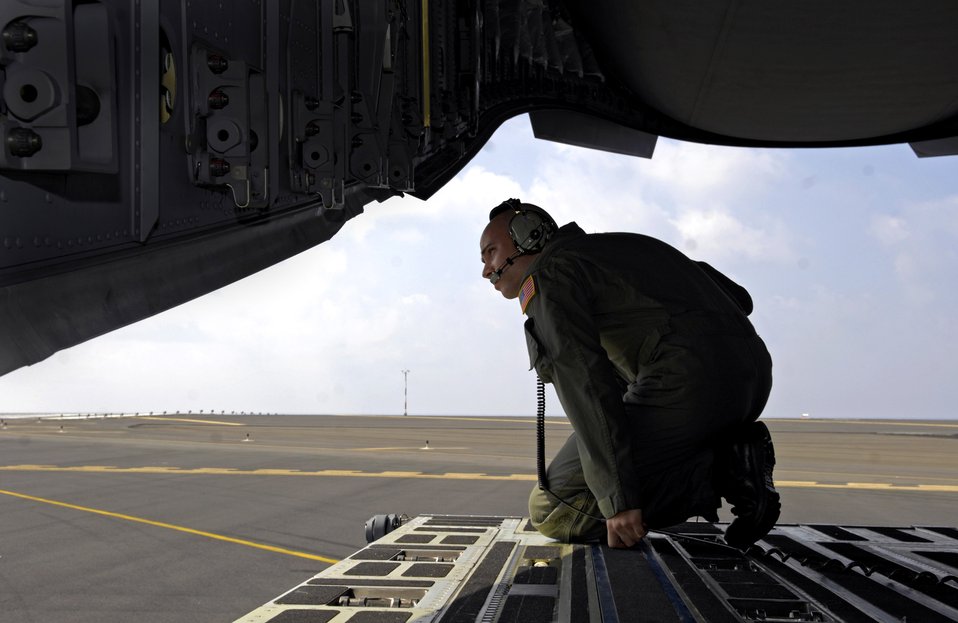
Globemaster training

Senior Airman Nick Kaslin checks for obstacles around his C-17 Globemaster III before it backs on a parking ramp Nov. 15 at Kona International Airport. Airman Kaslin is a loadmaster with the 535th Airlift Squadron from Hickam Air Force Base, Hawaii.